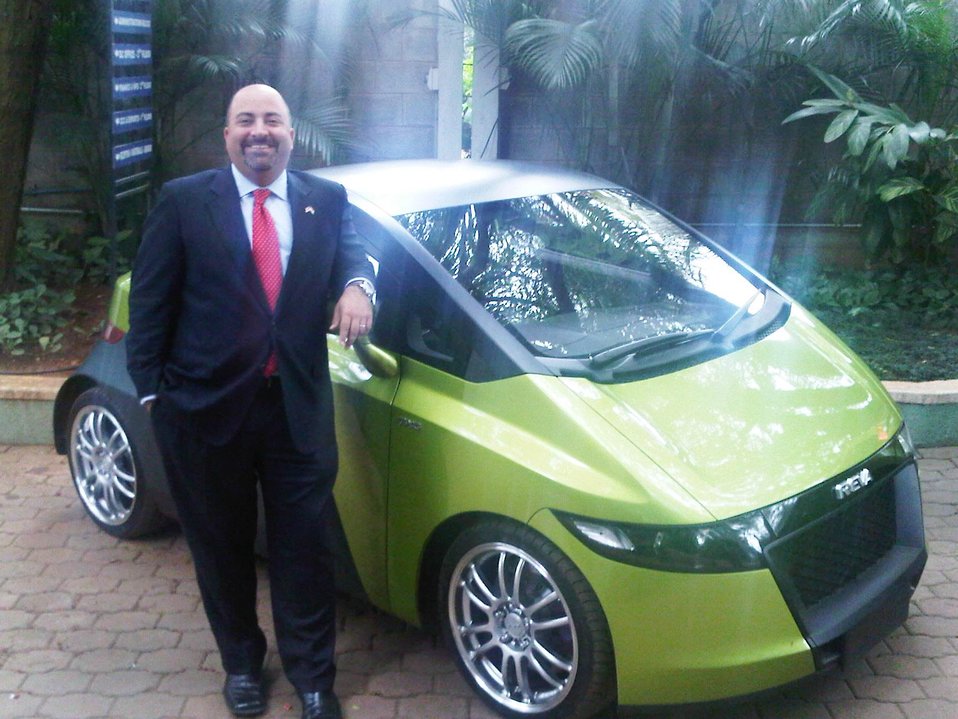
Acting Deputy Assistant Secretary Keshap Stands Beside a Mahindra Reva Electric Car

U.S. Acting Deputy Assistant Secretary of State for South and Central Affairs Atul Keshap stands beside a Mahindra Reva electric car in Bangalore, India, on July 20, 2010.